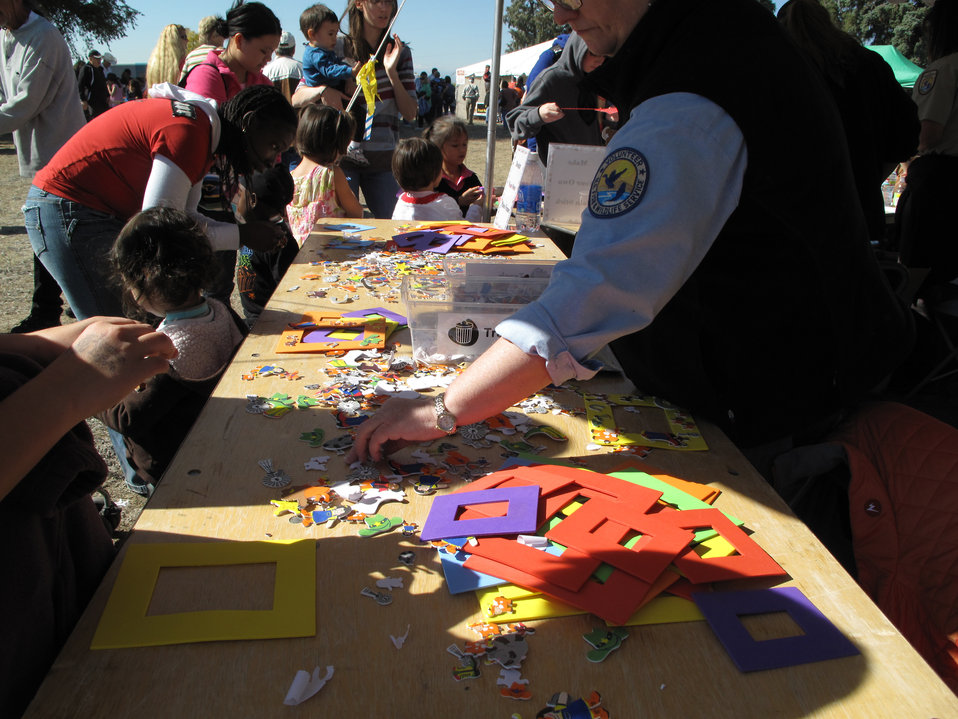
Refuge Round-up 2010

Arts and crafts booth.